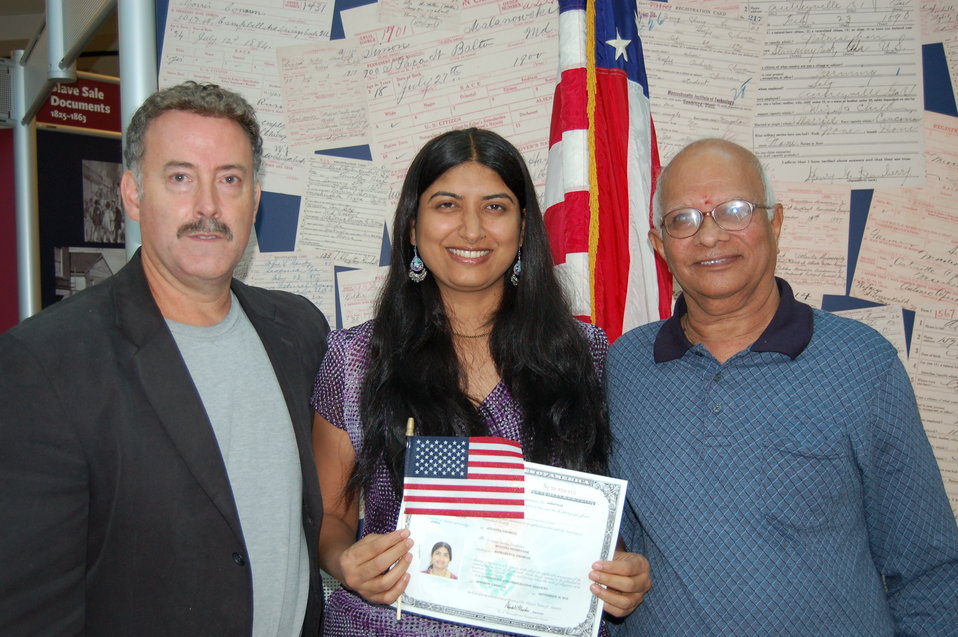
New Citizens